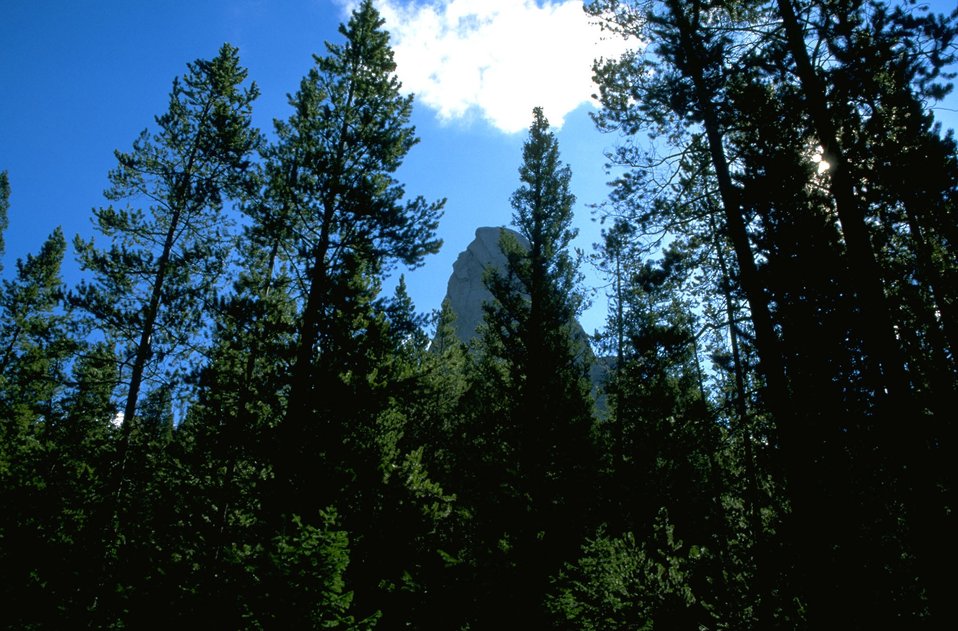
Rock formation and trees in the Humbug Spires Wilderness Study Area